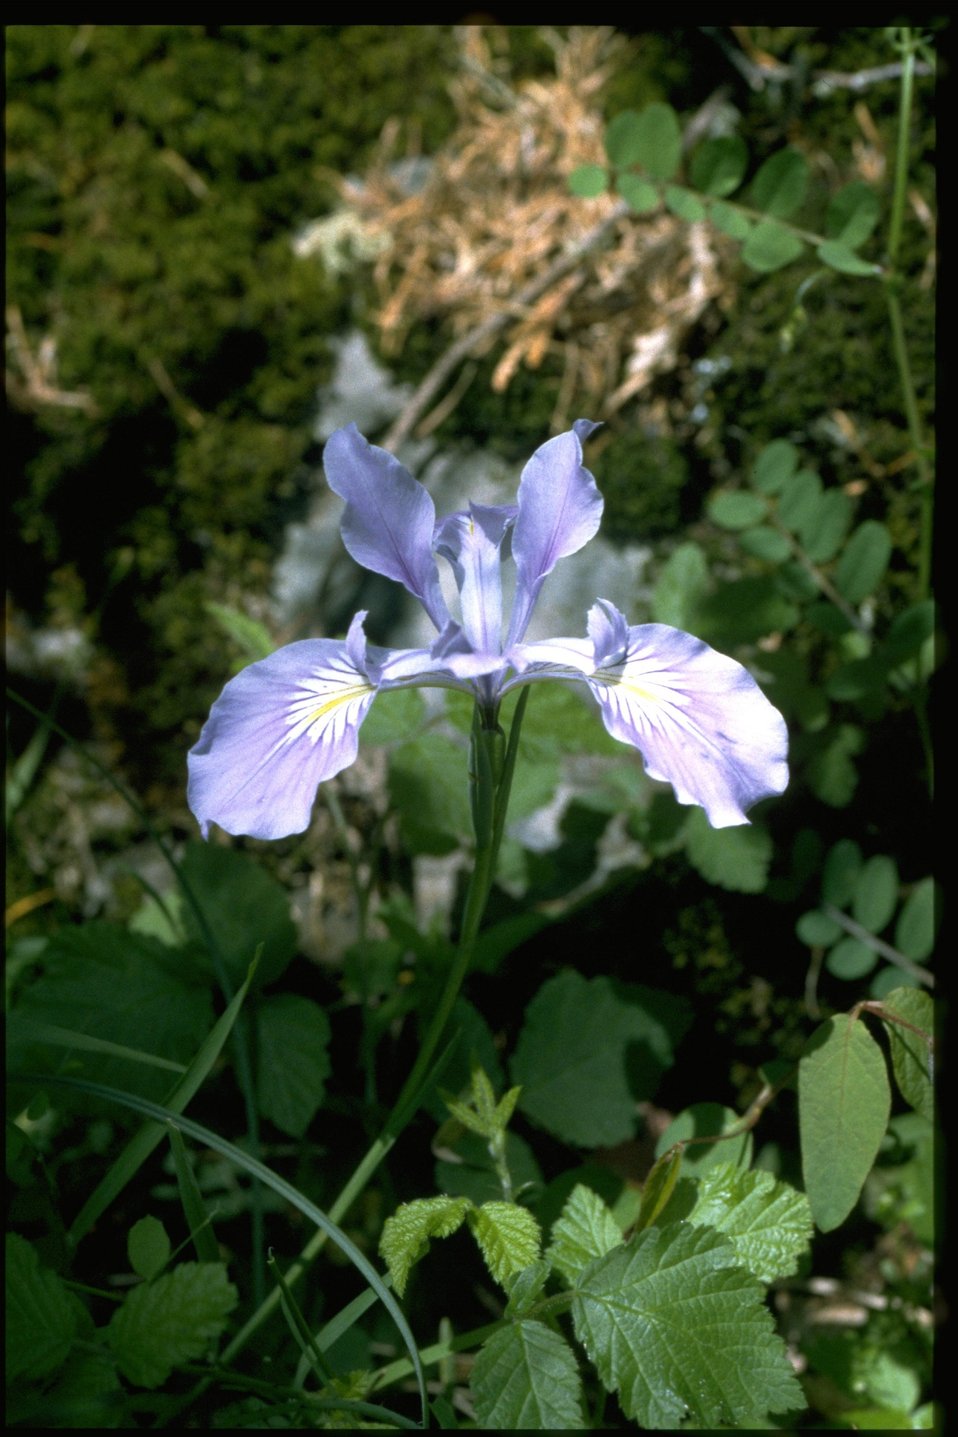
Medium shot of Iris tenax.